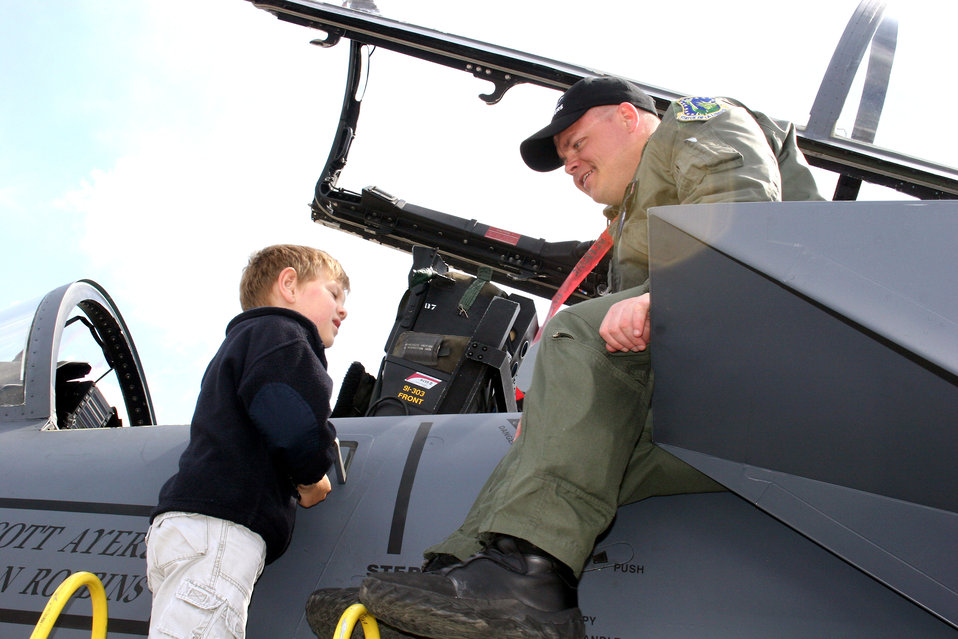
Berlin Air Show a hit

Capt. D. J. Vollmer talks with a young visitor from atop an F-15E Strike Eagle on May 20, 2006, at the Berlin Air Show at Berlin-Schoenefeld Airport. Captain Vollmer is a weapons systems officer with the 492nd Fighter Squadron at Royal Air Force Lakenheath, England. From May 19 to 21, 120,000 people visited the air show, which promoted the goals of enhancing interoperability among U.S. allies as well as the commitment to the preservation of Europe's security.